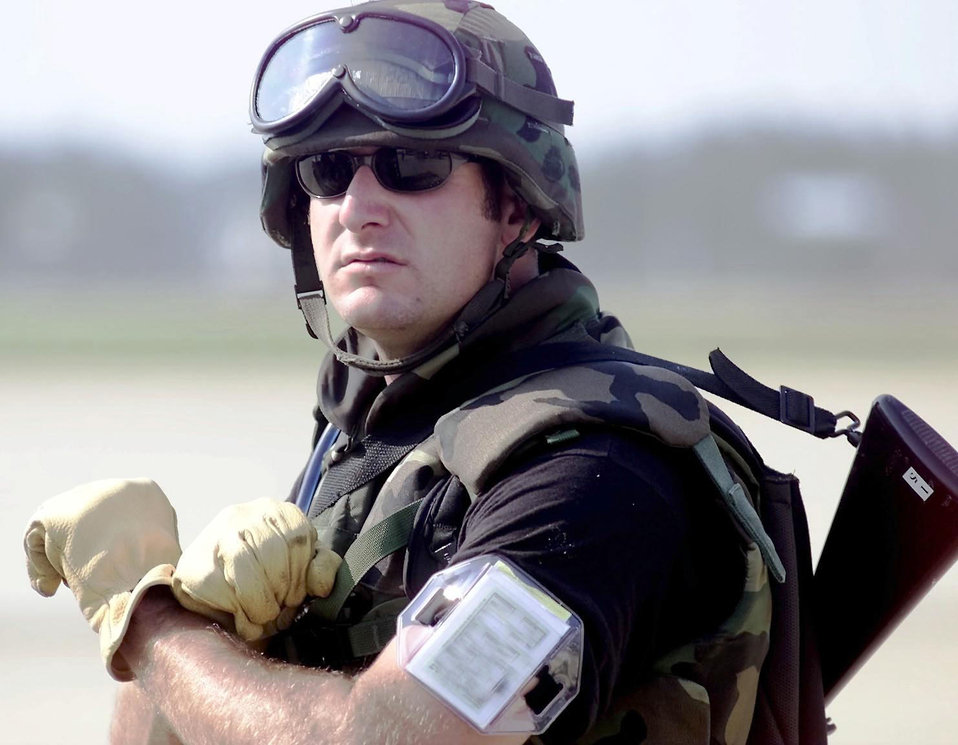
Equipment movement

GULFPORT, Miss. -- Air National Guard member Senior Airman Erik Eigenmen, deployed from the 152nd Aerial Port Flight Reno, Nev., to the Mississippi National Guard's Gulfport Combat Readiness Training Center, directs equipment movement during the 14th Air Expeditionary Wing IGX5A. IGX5A is an Operational Readiness exercise simulating the deployment of an Air Expeditionary Force to a forward operating location, and is designed to evaluate the readiness of U.S. Air Force personnel.